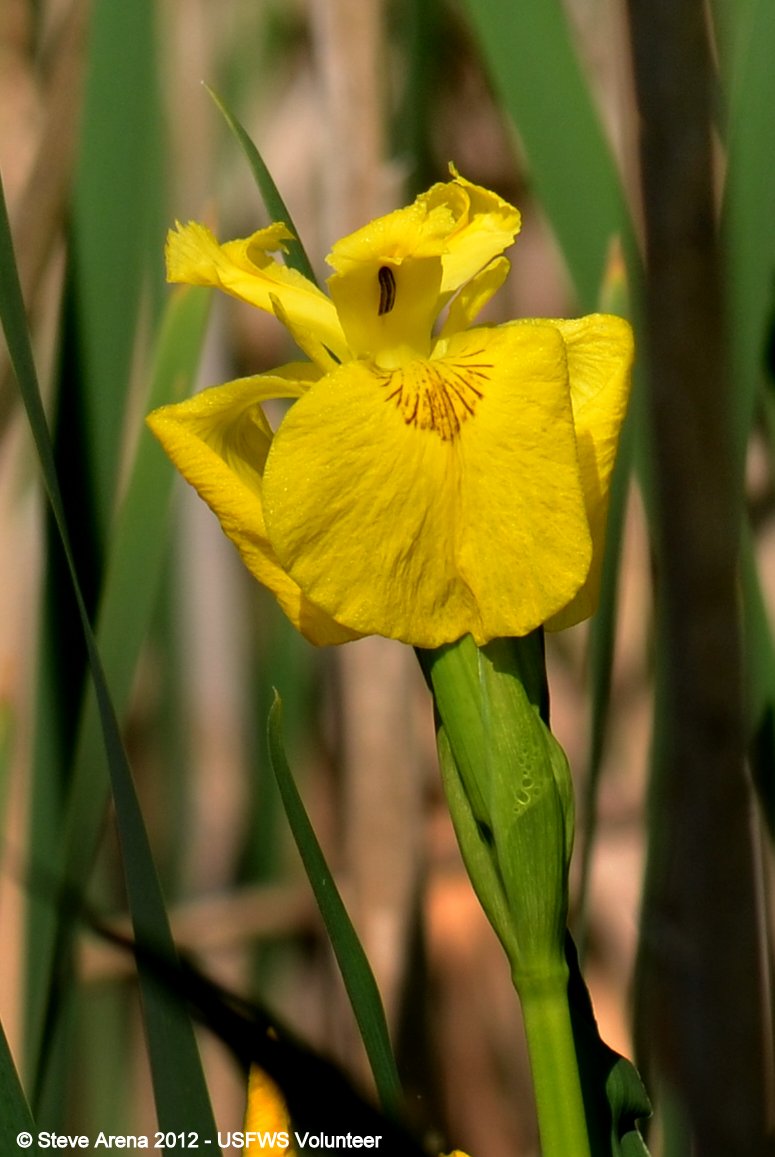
Yellow Flag (Iris pseudacorus) Great Meadows NWR, Concord, MA

Yellow Flag Great Meadows NWR, Concord, MA

Credit: Steve Arena/USFWS

18 May 2012